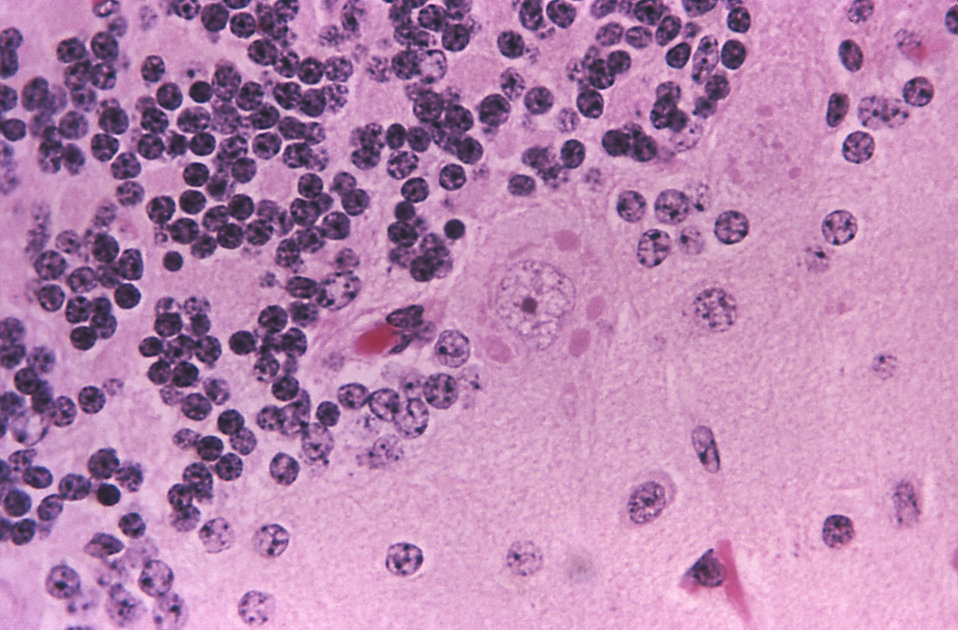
This photomicrograph demonstrates cellular changes associated with rabies encephalitis using an H&E staining technique.